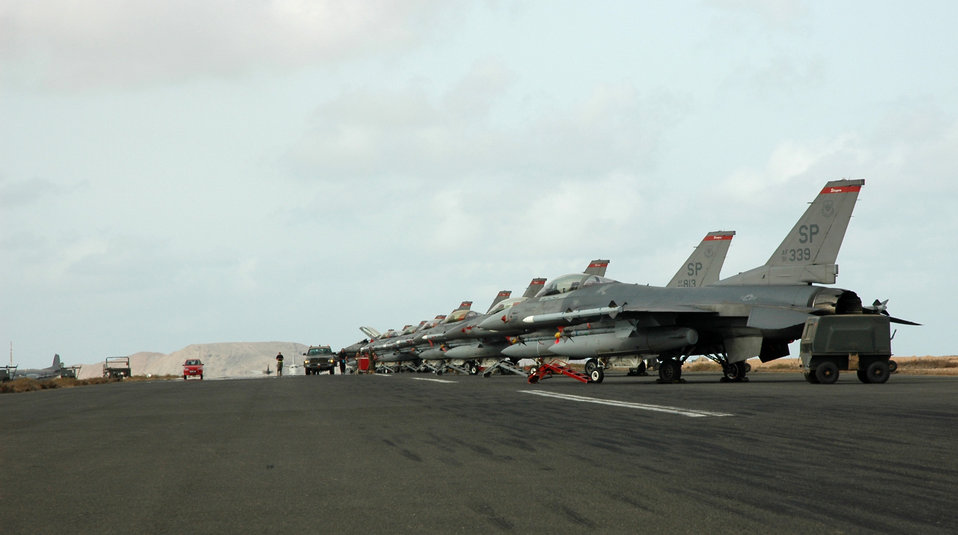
NATO troops exercise at Steadfast Jaguar

F-16 Fighting Falcons from the 22nd Fighter Squadron at Spangdahlem Air Base, Germany, are deployed to Sal, Cape Verde, for NATO's Exercise Steadfast Jaguar. More than 7,000 NATO servicemembers from land, maritime and air components are participating in the exercise, which ends today.